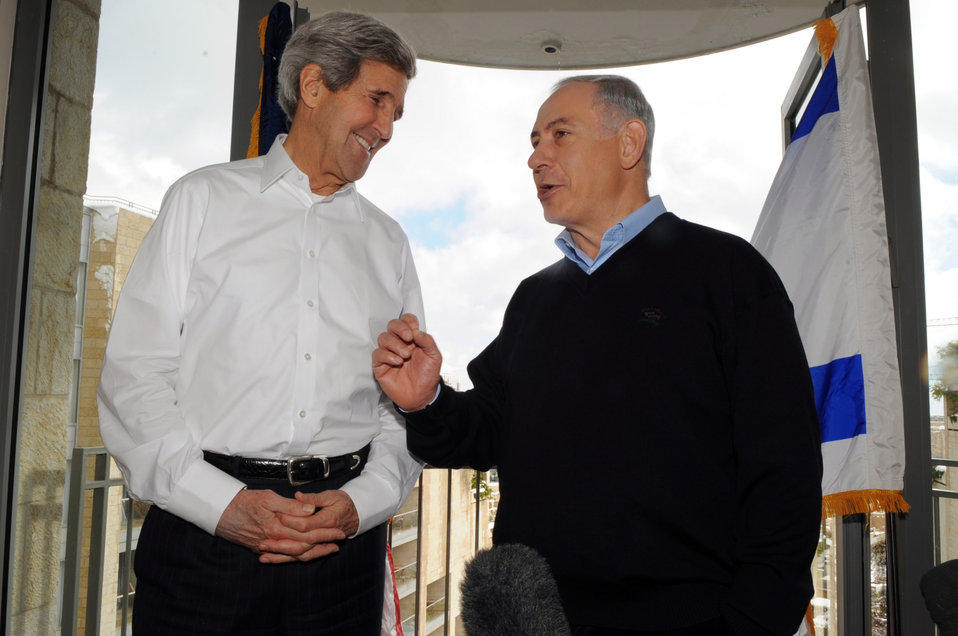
Israeli Prime Minister Netanyahu Welcomes Secretary Kerry to Snowy Jerusalem

Israeli Prime Minister Benjamin Netanyahu welcomes U.S. Secretary of State John Kerry to a snowy Jerusalem before a bilateral meeting on December 13, 2013.